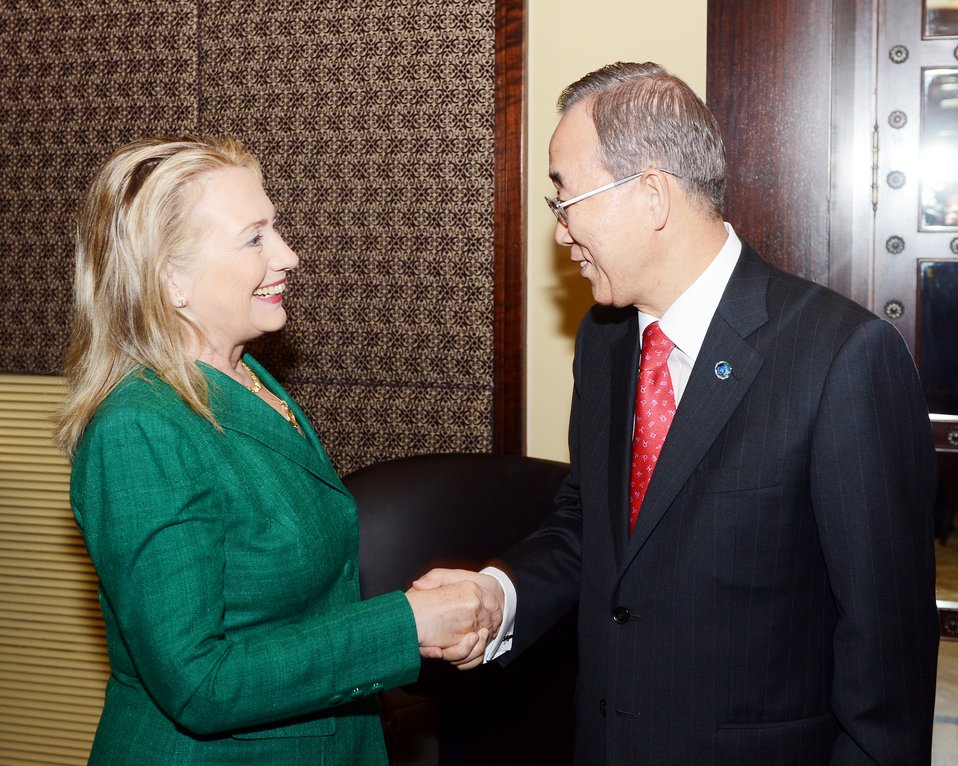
Secretary Clinton Shakes Hands With UN Secretary-General Ban Ki-moon

U.S. Secretary of State Hillary Rodham Clinton shakes hands with UN Secretary-General Ban Ki-moon at the King David Hotel in Jerusalem, November 21, 2012.